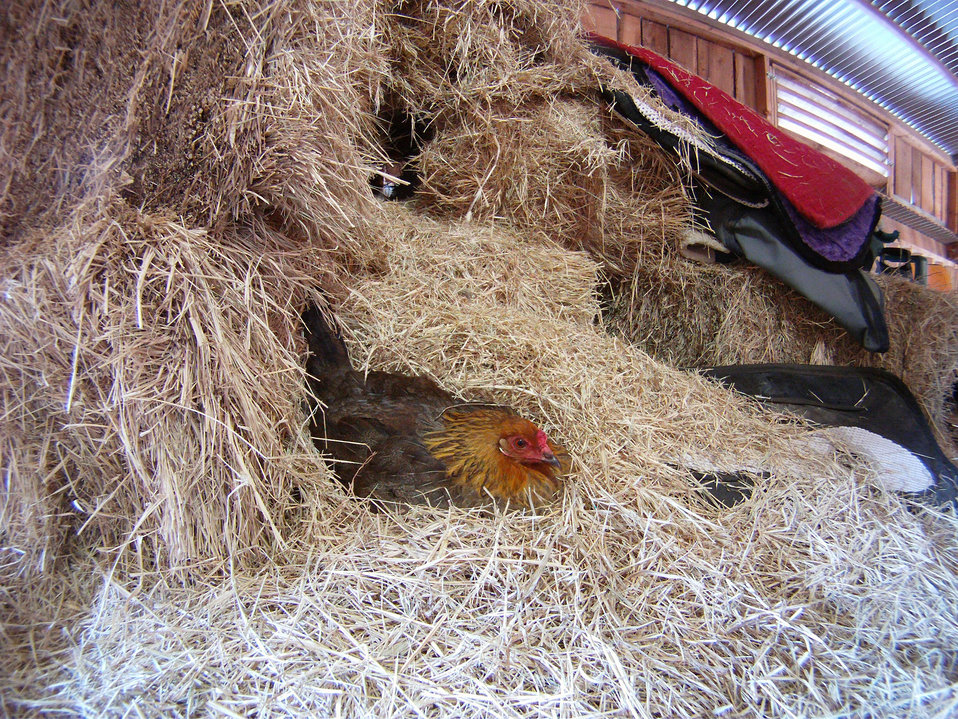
One of Joe Higdon's ranch hens sits atop 12 eggs while taking shelter from the floods in the loft of his barn on President's Island. The island is still submerged under 6-12 feet of Mississippi River waters near Memphis, TN, on Sunday, May 15. 2011.